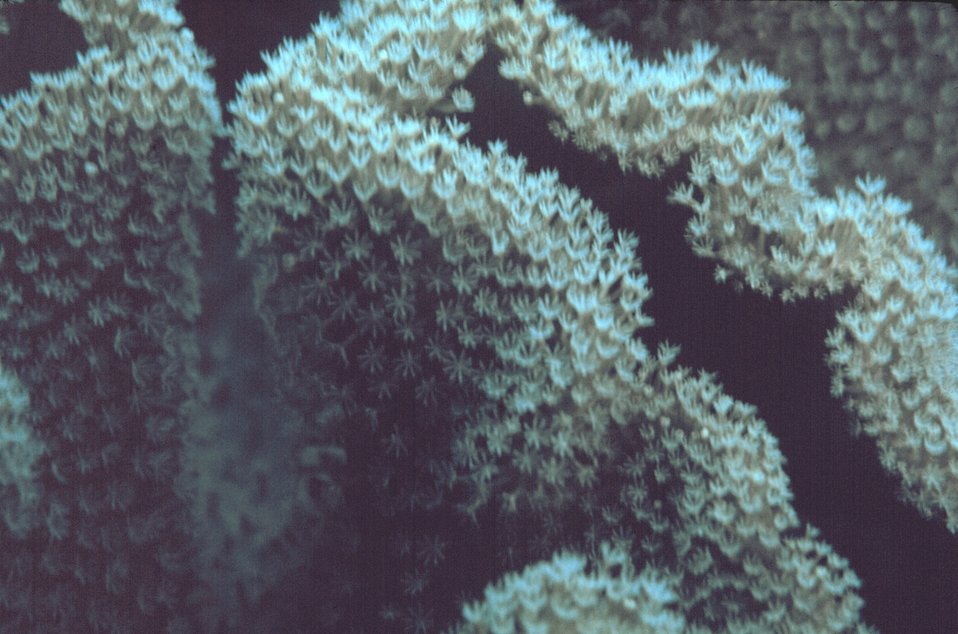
Coral polyps extended for feeding